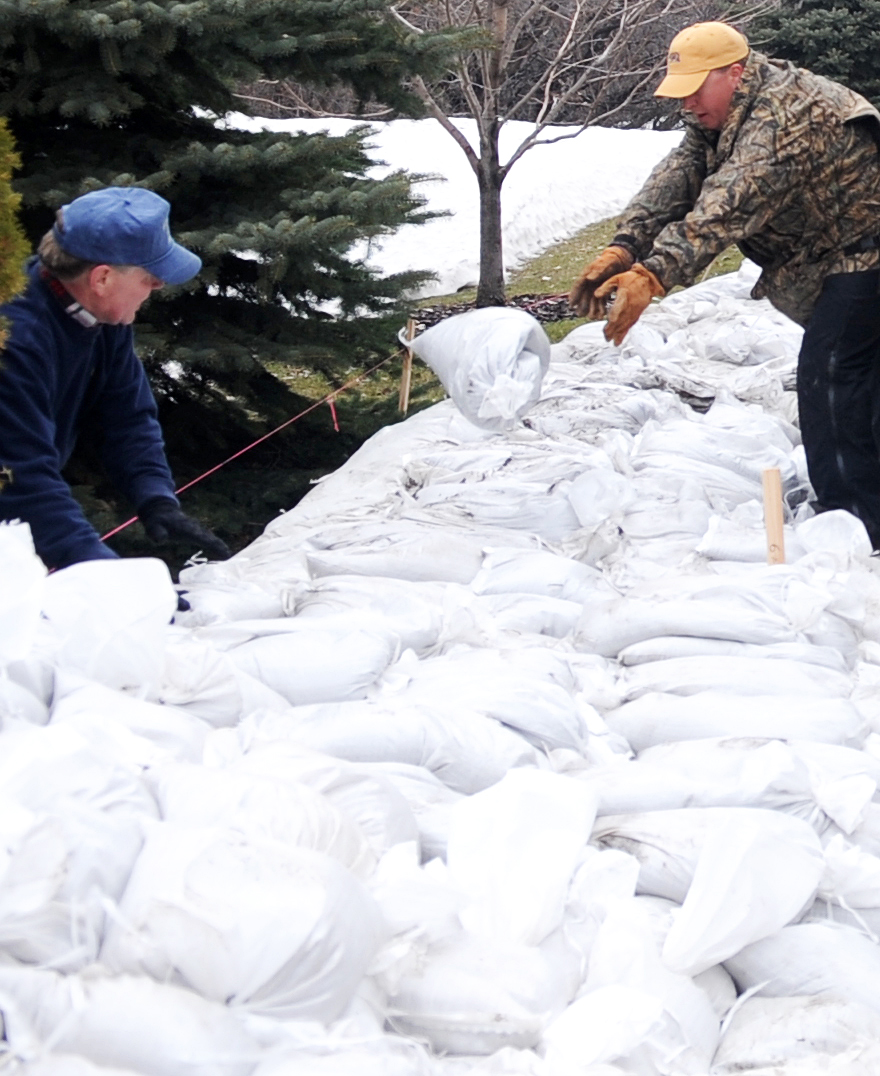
Airmen dedicate time, energy to flood preparations

Volunteers and neighbors work together to protect homes from rising flood waters in a Fargo, N.D., neighborhood. Many Grand Forks Air Force Base, N.D., Airmen have volunteered throughout the region to support flood protection efforts.